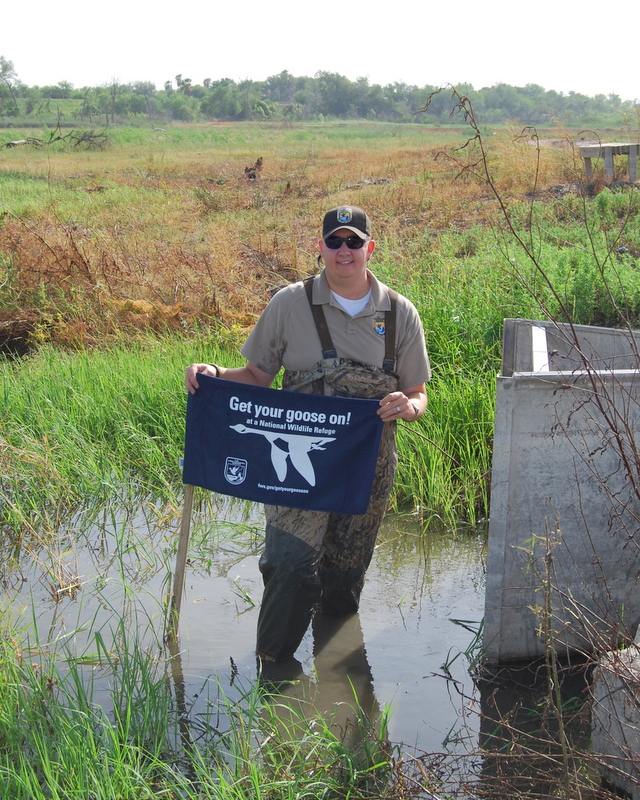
Get Your Goose On!

USFWS employee checking the water flow in the Pintail Lakes area at Santa Ana National Wildlife Refuge in southern Texas.